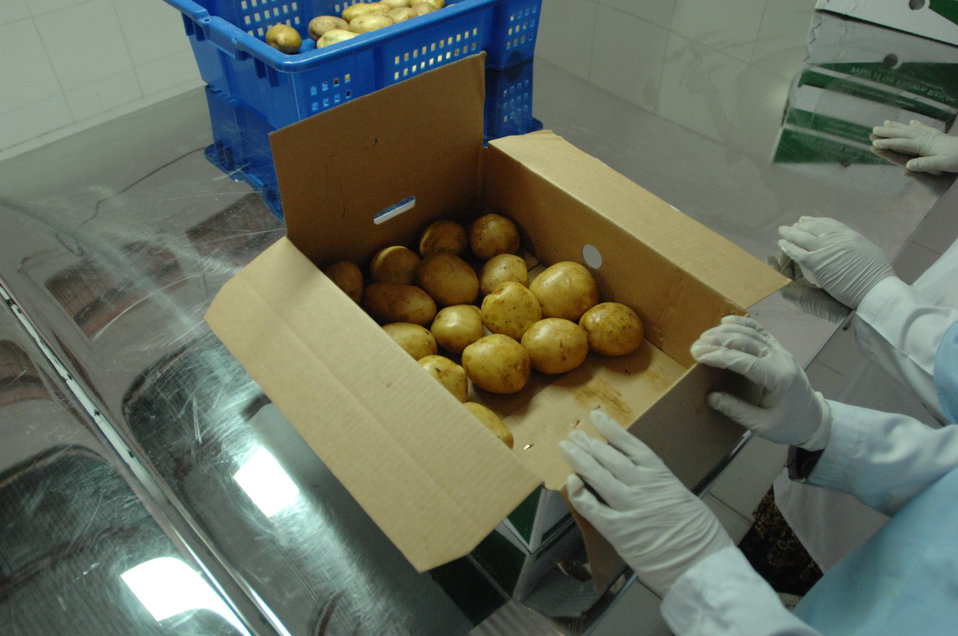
110209sv Shah248

The Surkh Rod vegetable packing facility in Surkh Rod, Nangarhar Province, on Wednesday, February 9, 2011. (S.K. Vemmer/Department of State)